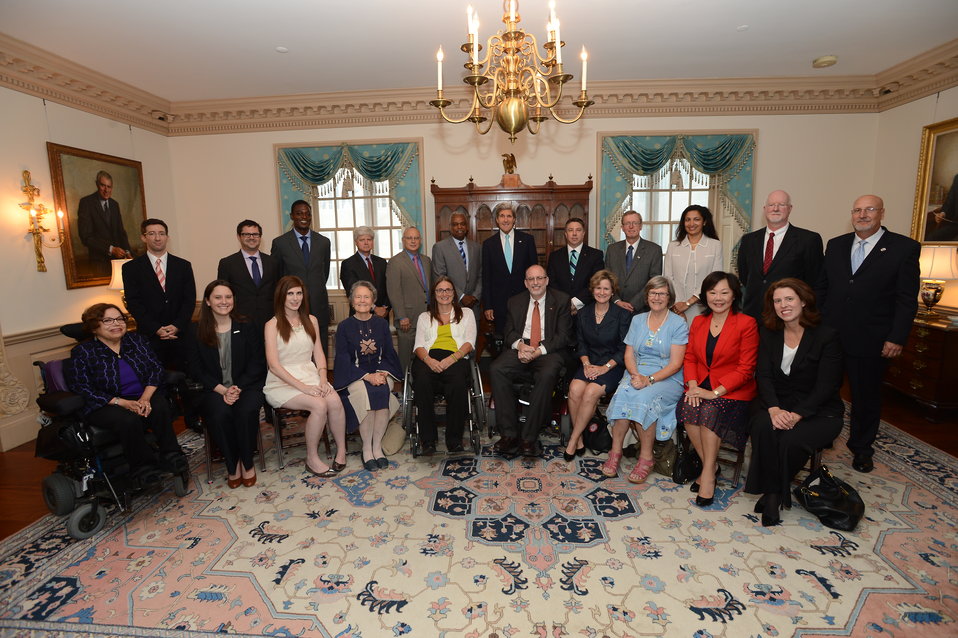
Secretary Kerry Meets With Business, Veteran, Faith and Disability Organization Leaders on the Convention on the Rights of Persons with Disabilities

U.S. Secretary of State John Kerry meets with Business, Veteran, Faith and Disability Organization Leaders on the Convention on the Rights of Persons with Disabilities at the U.S. Department of State in Washington, D.C., on July 23, 2013.